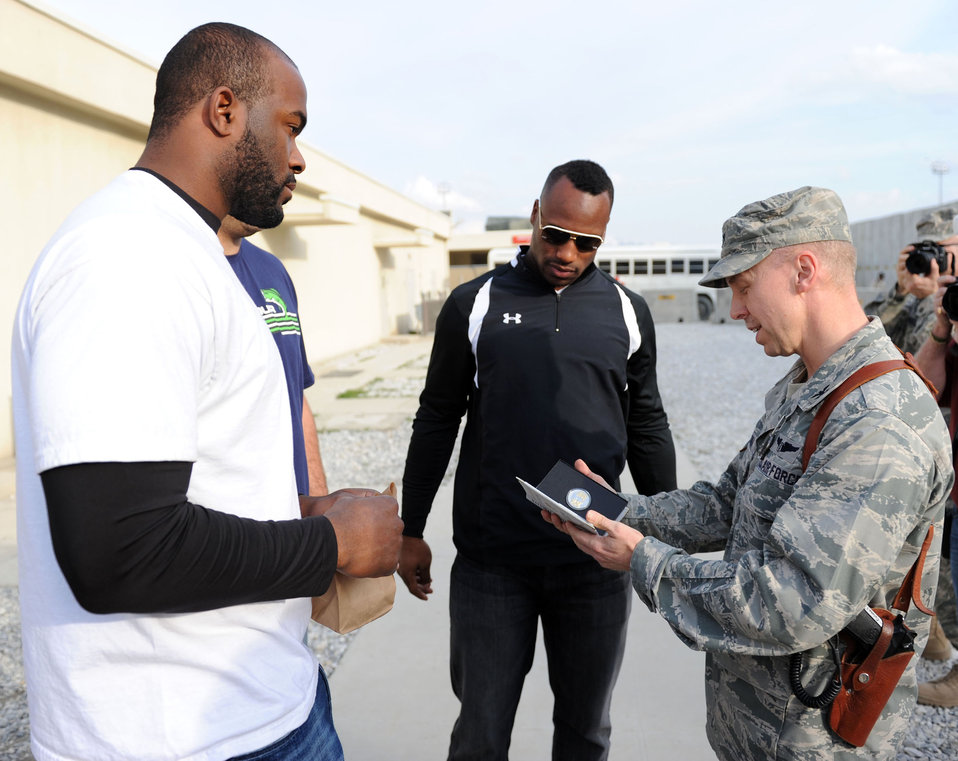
NFL players visit Bagram Airmen

Col. Joseph Chozinski receives an official game day coin from Mario Williams of the Houston Texans and Vernon Davis of the San Francisco 49ers during the National Football League players visit to the Craig Joint Theater Hospital March 5, 2010, at Bagram Airfield, Afghanistan. Colonel Chozinski is the 455th Expeditionary Medical Group/Task Force Medical commander.